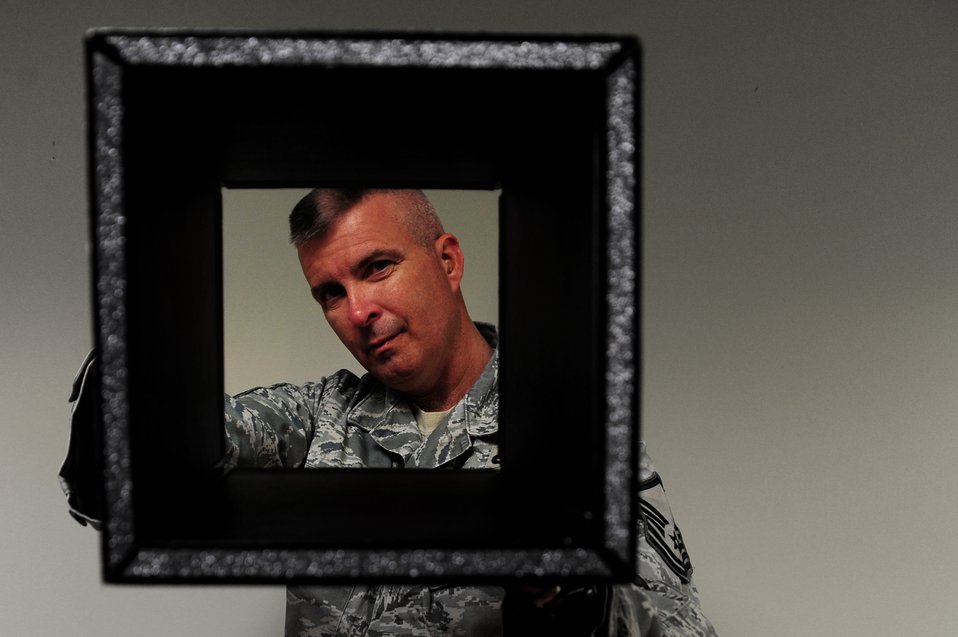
Master Sgt. Perry Woods shows that the box is empty while he demonstrates one of his magic tricks at Joint Base Charleston - Air Base Nov. 30. Woods has been in the Air Force for 22-years and has been performing magic since he was nine-years old. He has volunteered to perform his magic shows for local organizations and charities for the past three years. Woods is a program manager with the 437th Maintenance Squadron.